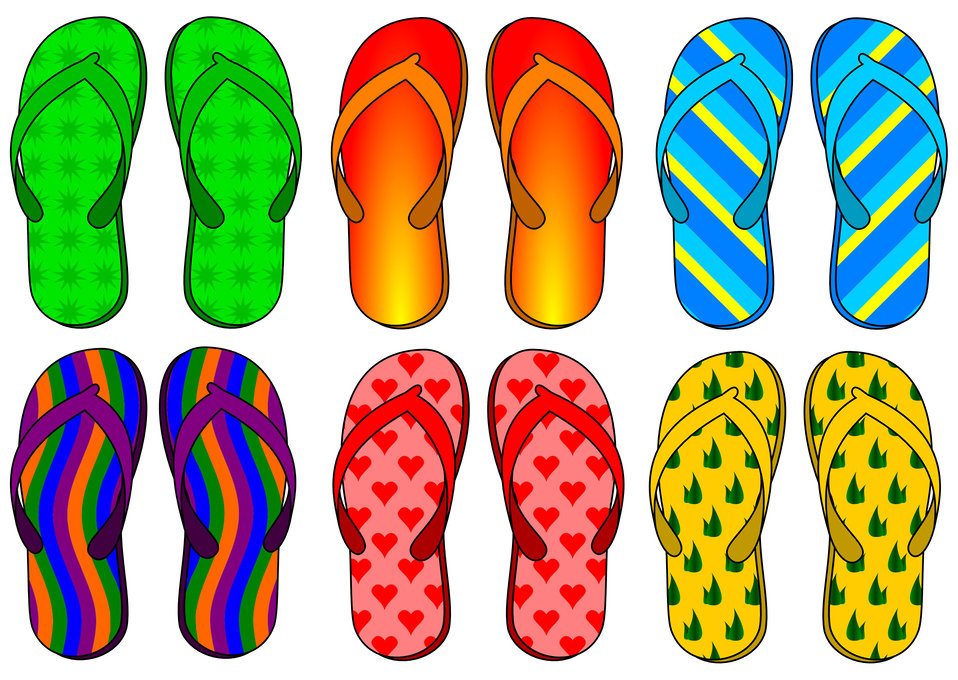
Flip flops

Some pairs of flip flops.